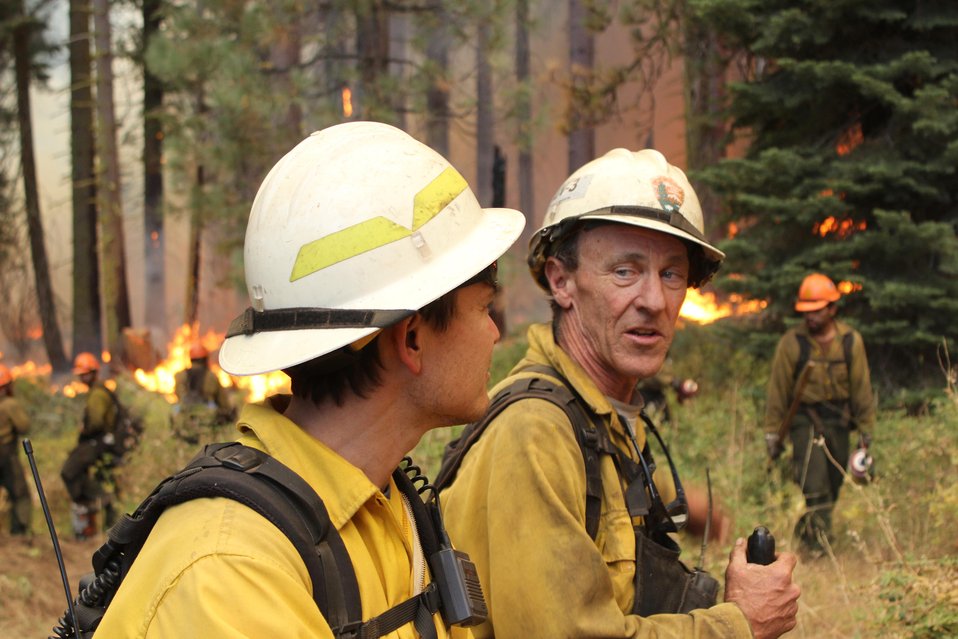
Crews at near Highway 120 discuss fire burn operations at the Rim Fire. The Rim Fire in the Stanislaus National Forest near in California began on Aug. 17, 2013 and is under investigation. The fire has consumed approximately 235,841 acres and is 70% contained.